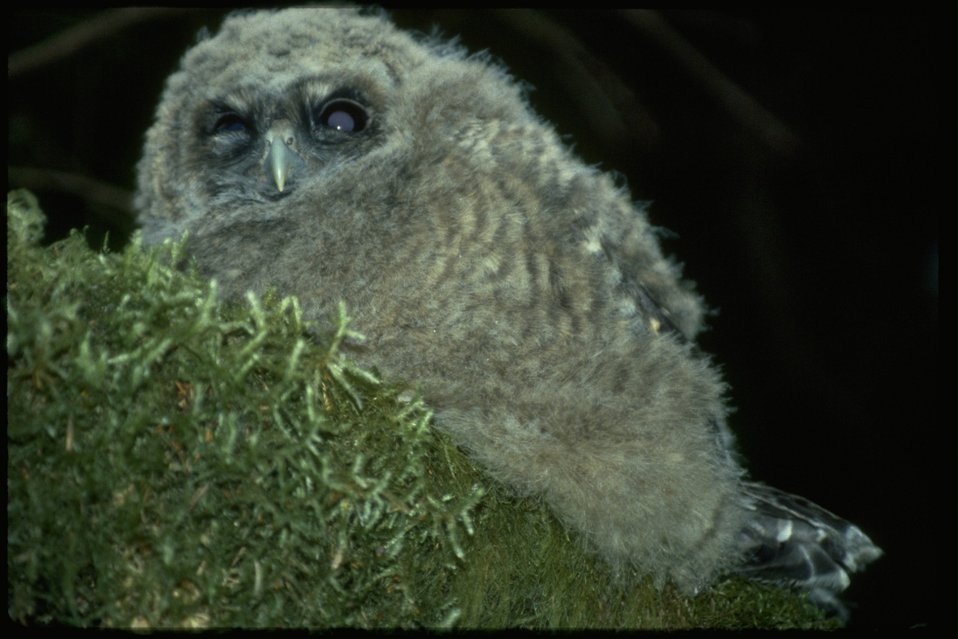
Spotted Owl Chick.